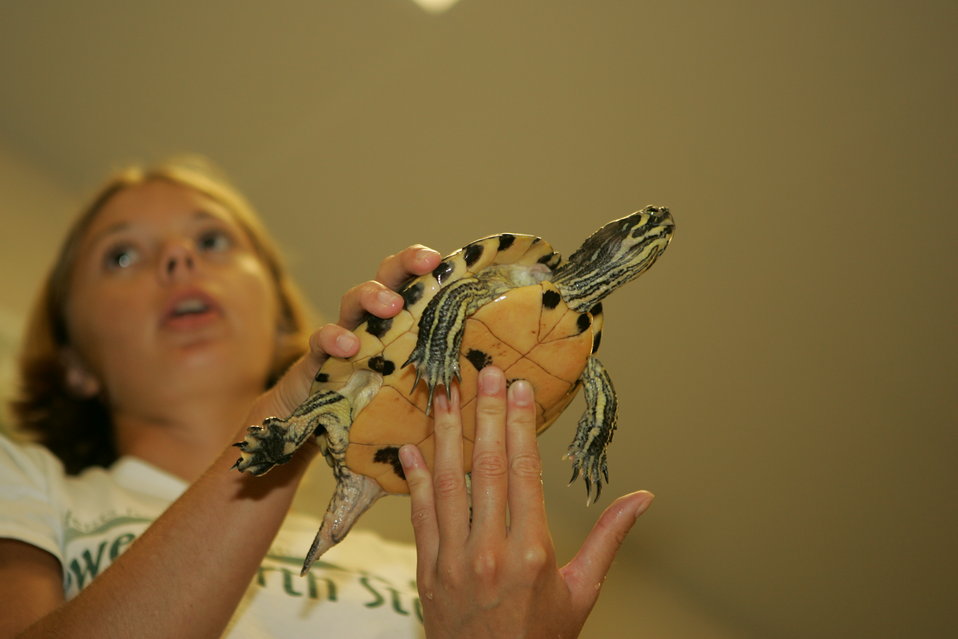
A young girl handles a turtle

Learn about nature at your local National Wildlife Refuge by participating in their educational activities.